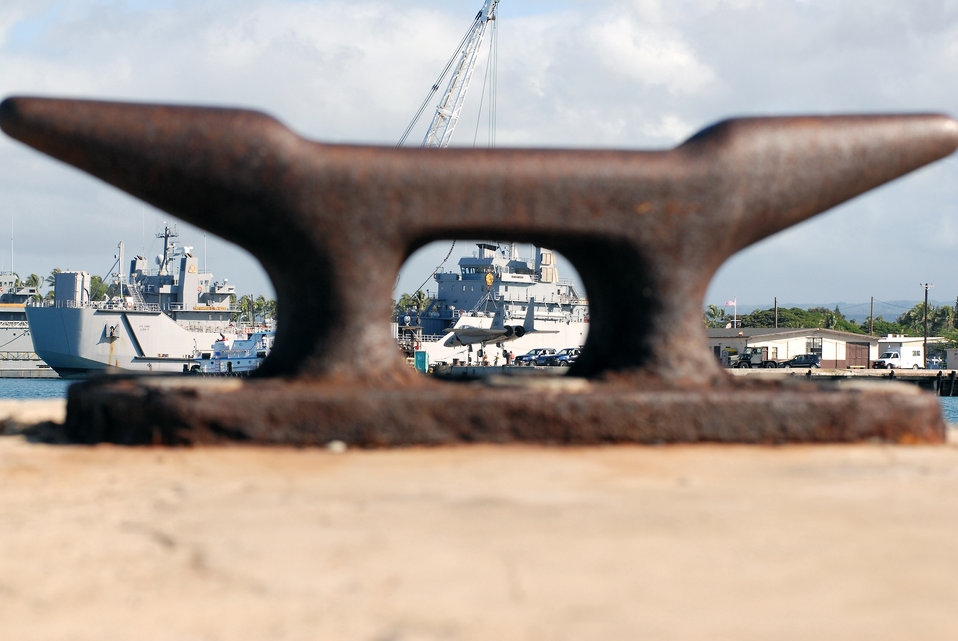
Flying low

An F-15 Eagle gets a lift from a barge crane for its vogue to the Pacific Aviation Museum Pearl Harbor on Ford Island in Hawaii Aug. 26 at the cargo pier at Hickam Air Force Base, Hawaii. The aircraft was from the 199th Fighter Squadron of the Hawaii Air National Guard.